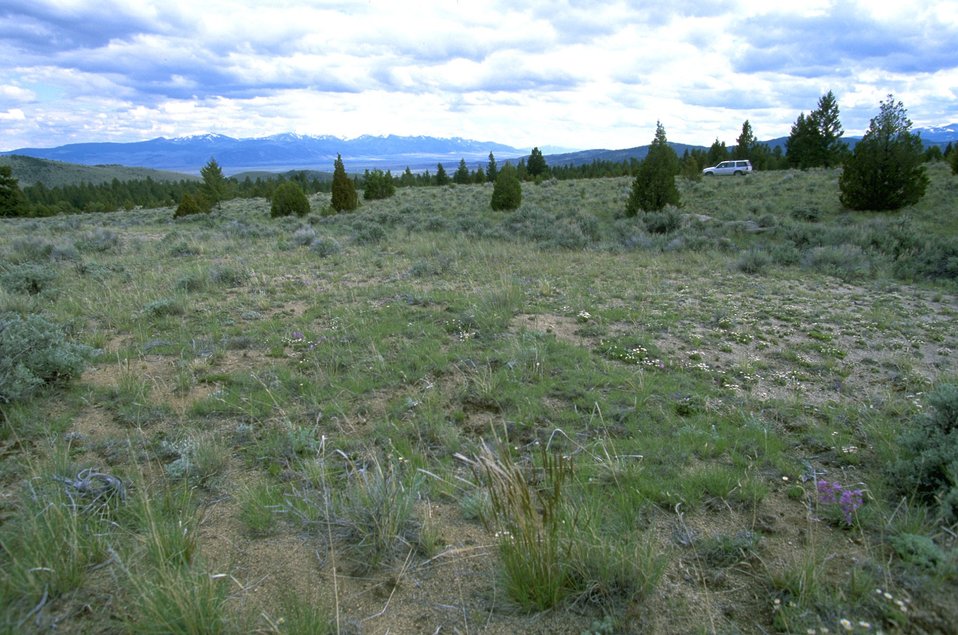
View of the mountains in the distance from Day Use Area